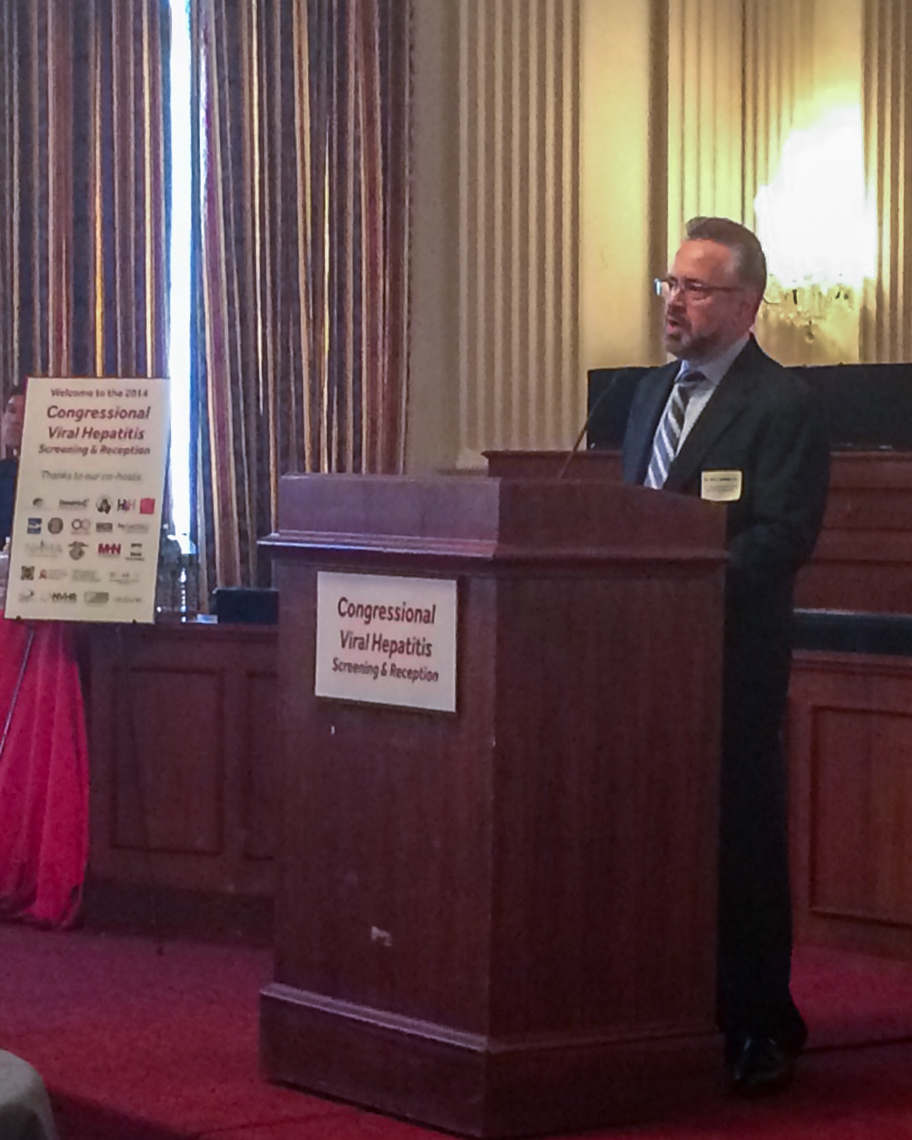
14 0519 HepTestingDay-5